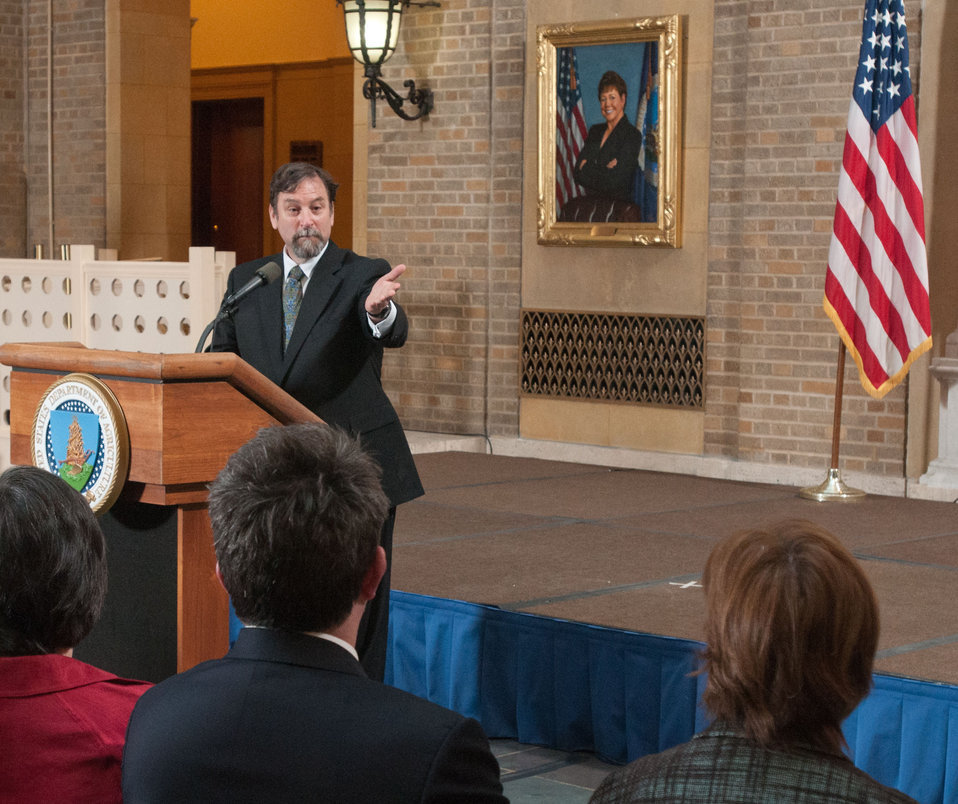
Agriculture Office of Foreign Service Operations Deputy Administrator Jim Higgeston made opening remarks for the U.S. Department of Agriculture (USDA), Foreign Service Oath of Office Ceremony for new Agriculture Foreign Service Officers, in Washington, D.C., on Thursday, March 15, 2012.